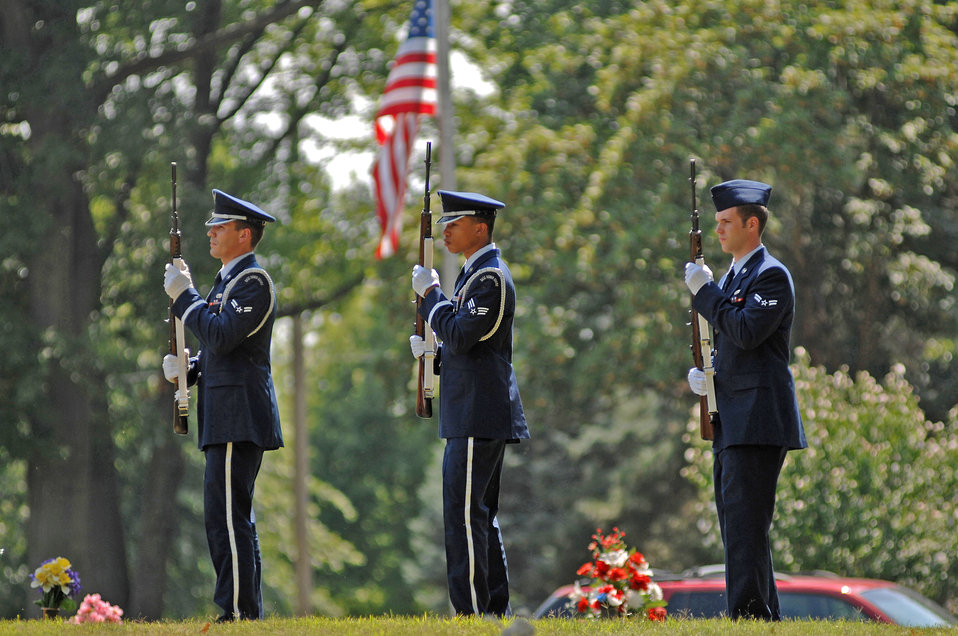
War hero brought home, laid to rest after 30 years MIA

Airmen with the Whiteman Air Force Base Honor guard render a 21-gun salute July 27 to honor Chief Master Sgt. Quincy Adam at Chapel Hill Memorial Cemetery. Chief Adam is a Vietnam War veteran who was missing in action for more than 40 years. Chief Adam's remains were discovered in Southeast Asia and he was finally brought home to be laid to rest, giving his family closure in their lives.